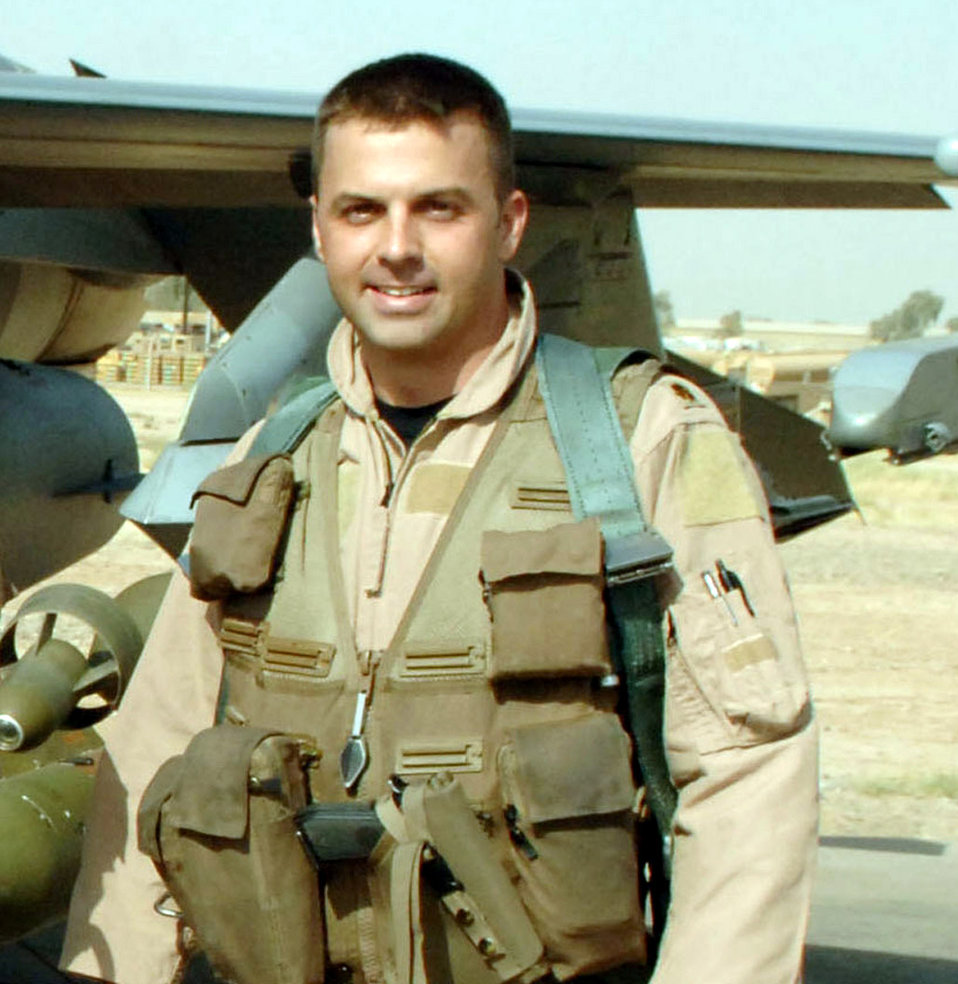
Balad chapel staff opens center in fallen pilot's honor

The chapel staff at Balad Air Base, Iraq, opened a new Airmen Ministry Center May 4 in honor of Maj. Troy Gilbert. Major Gilbert was an F-16 Fighting Falcon pilot from Luke Air Force Base, Ariz., who deployed to Balad AB and died while supporting U.S. ground forces pinned down by anti-Iraqi forces Nov. 27, 2006.